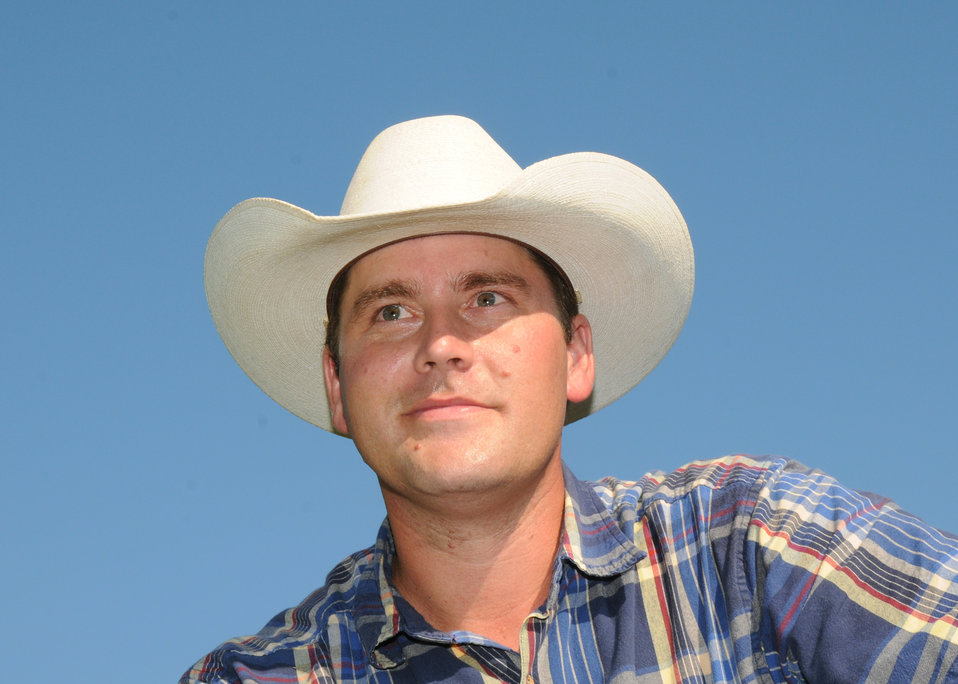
Steve Burris, new young farmer in McLoud, OK.